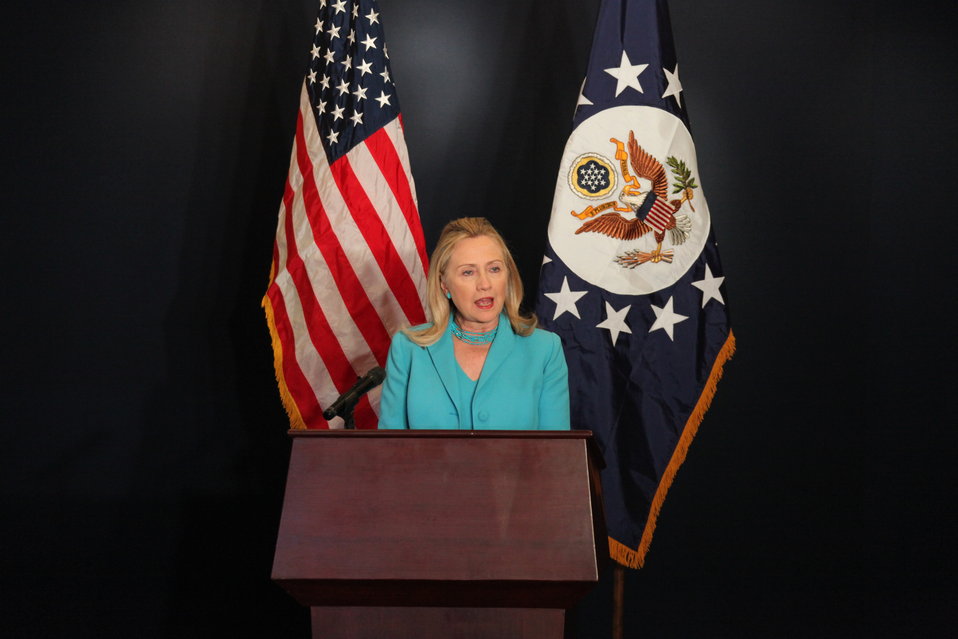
Secretary Clinton Addresses Burmese Press

U.S. Secretary of State Hillary Rodham Clinton addresses Burmese and international press in Nay Pyi Taw, Burma, on December 1, 2011.